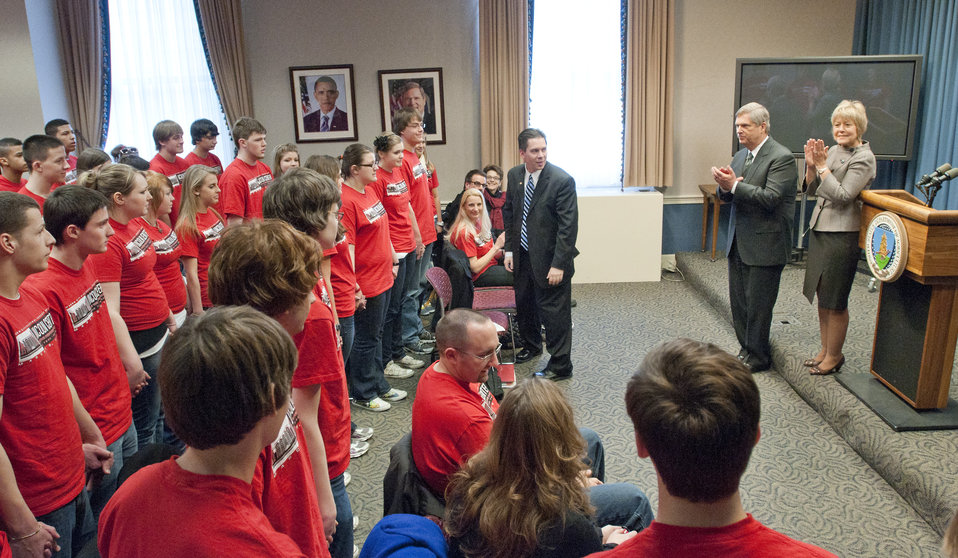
Secretary Tom Vilsack and his wife Christie applauded the 90 students from Mason City High School and the Director of Choral Activities Joel Everist (suited in center), from Mason City, Iowa for the song they sang for them on March 25, 2011 at the U.S. Department of Agriculture (USDA) headquarters in Washington, D.C.